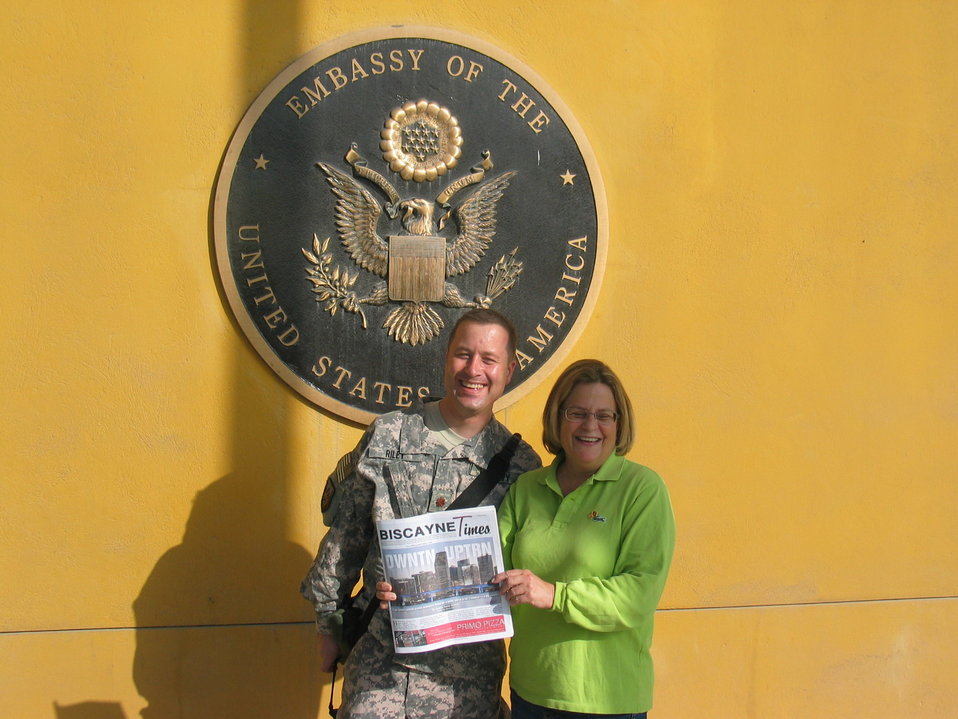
CODEL Berman